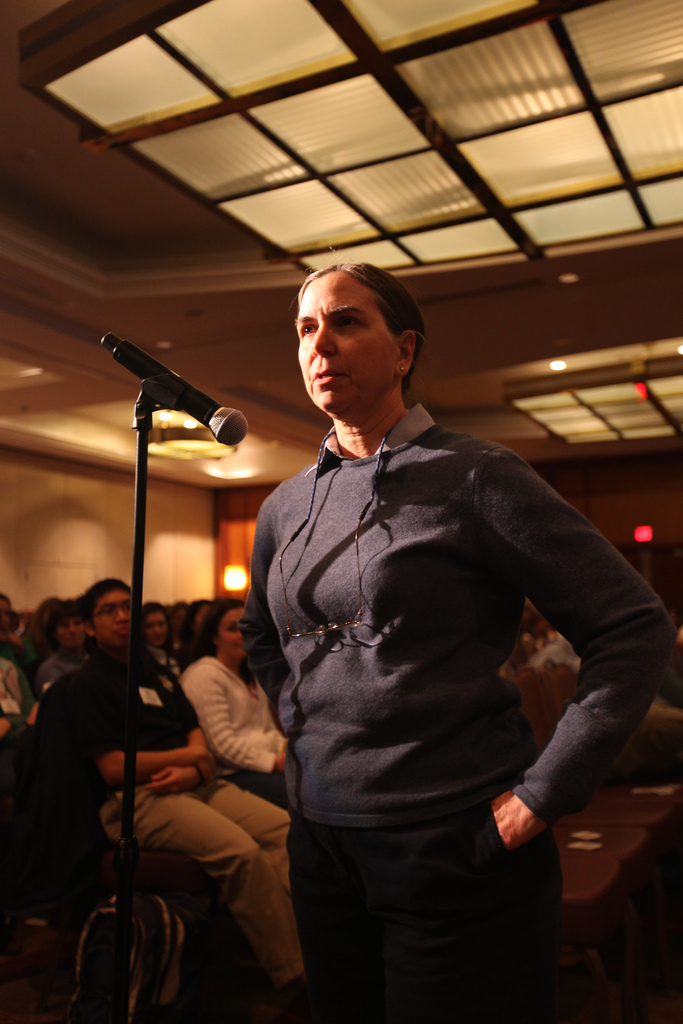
Town Hall

Biologist speaking at the Friday morning Town Hall session, where attendees were welcome to discuss their ideas on how to further landscape conservation.